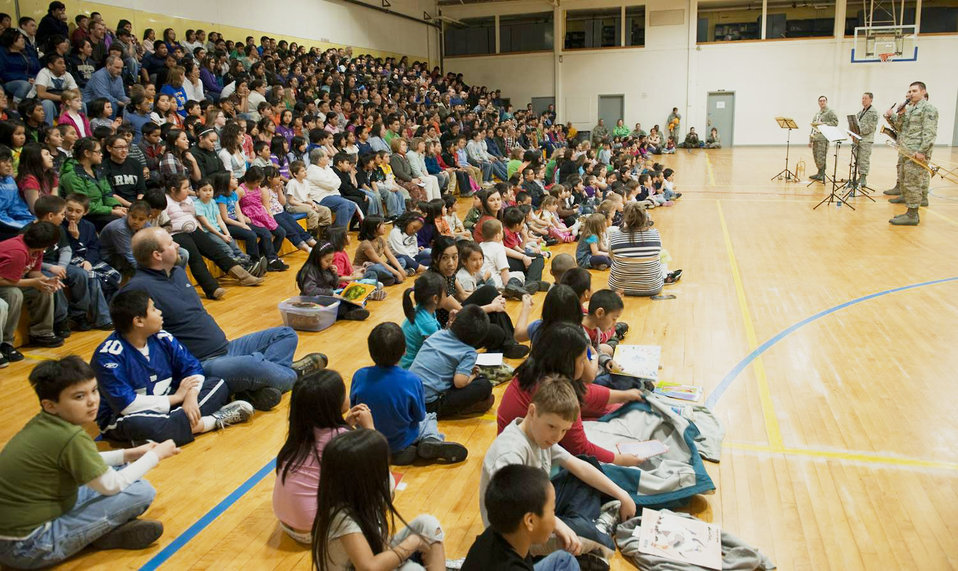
Northern Lights entertain native Alaskans during Operation Artic Care

Members of the Pacific Air Forces Northern Lights brass ensemble introduce themselves to elementary and high school students April 20, 2010, in Kotzebue, Alaska.